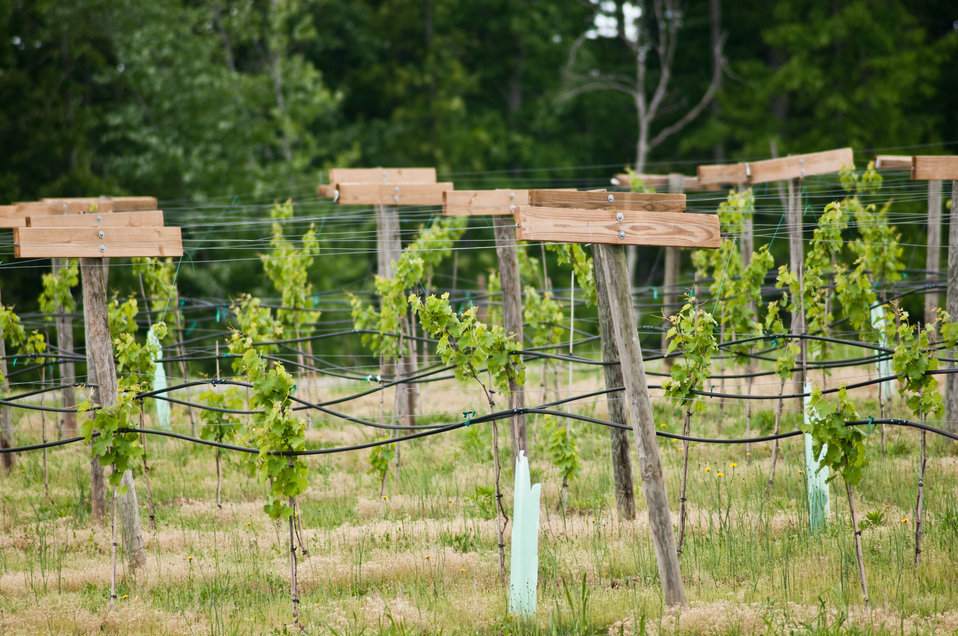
Cooper Vineyards in Louisa, VA, is the first winery on the East Coast and the second in the country to be awarded the fourth and highest, Platinum certification by Leadership in Energy and Environmental Design (LEED).
From a Virginia Wine Board Marketing Office press release, “The process of building a LEED platinum certified building was initially more expensive and arduous than co-owners, Jacque Hogge, MD and Geoffrey Cooper, MD expected, but they were able to get financial assistance from the United States Department of Agriculture. “Know that there are grants available to help with the costs of sustainable building projects,” Hogge advises to other potential green wineries. Cooper Vineyards received 2 of the 3 USDA (U.S. Department of Agriculture Rural Development (RD) Rural Energy Financing program) grants awarded in Virginia in 2010 to help with the expenses of their construction.”
Rural Energy Financing program focuses on loan guarantees, loans and grants to agricultural producers, businesses, cooperatives and rural residents for renewable energy systems and to make energy efficiency improvements.
The tasting room and building collects rainwater from the roof; uses low flow water fixtures to reduce usage by 40%; utilizes structurally insulated panels for the roof and walls; heats and cools the entire building using a geothermal system that includes pipes that are embedded in the parking lot; low-voltage LED lighting with daylight and occupancy sensors provide ample light when it is needed; a solar panel array provides more than 15% of the energy needs for the building, and much of the construction materials are from local and recycled material sources. For more information about USDA please go to www.usda.gov, Rural Development and Rural Energy Financing. LEED was developed by the U.S. Green Building Council (USGBC) is a 501 c3 non-profit organization committed to a prosperous and sustainable future for our nation through cost-efficient and energy-saving green buildings.